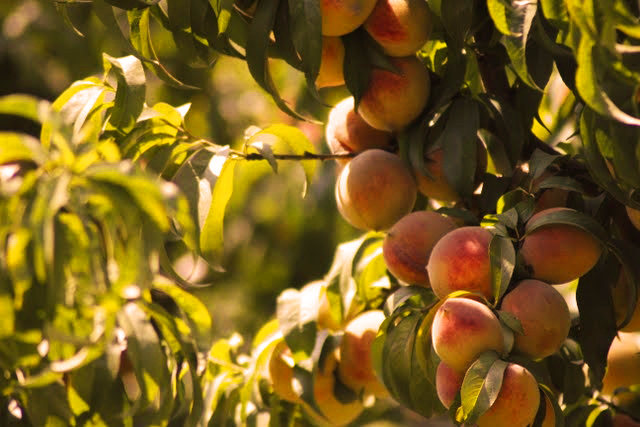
1. Swat district is responsible for 67 percent of the total peach production in Pakistan. The fruit enjoys a ready market nationally as well as abroad